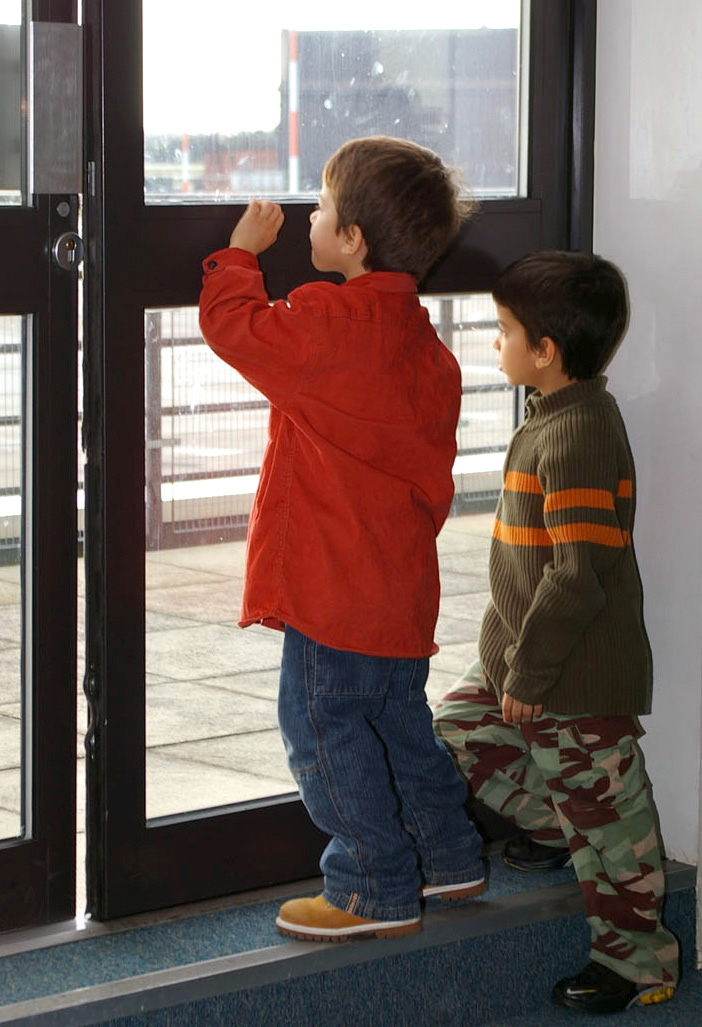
Airmen depart Mildenhall for Southwest Asia

Elijah Cardenas, 5, and his brother Andr?, 7, gaze out onto the runway Jan. 23 at Royal Air Force Mildenhall, England. They watch the plane outside being prepared for the deployment that their father, Senior Airman Miguel Cardenas, is preparing to leave on, to Southwest Asia. Airman Cardenas is assigned to the 100th Civil Engineer Squadron.